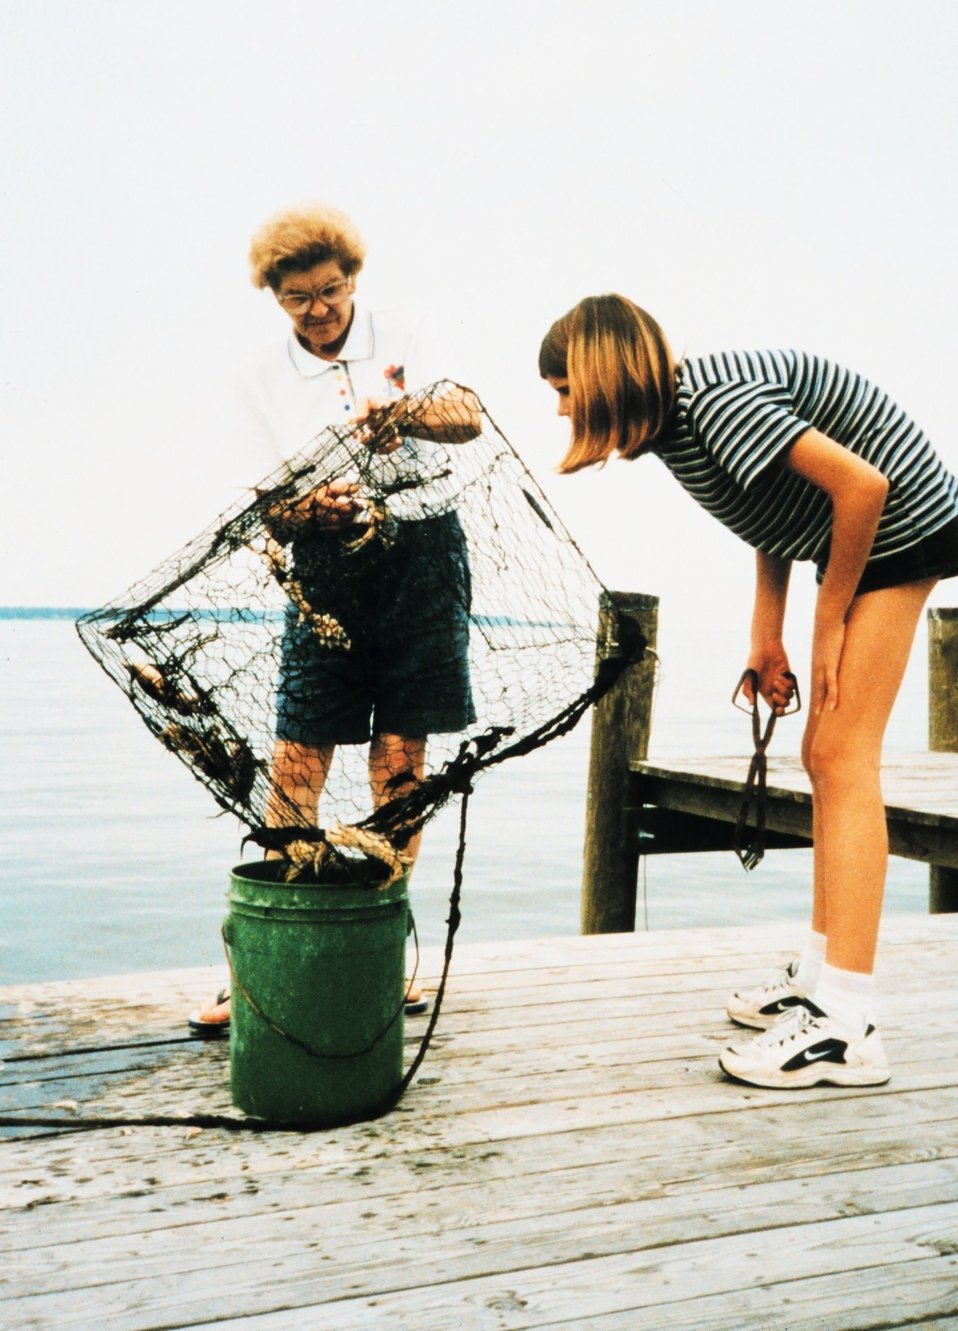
Emptying a crab pot. Passing on knowledge of the bay from generation to generation.